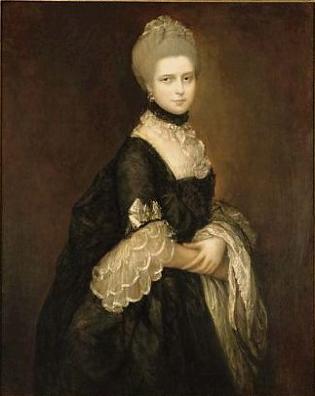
Gainsborough - Maria Walpole